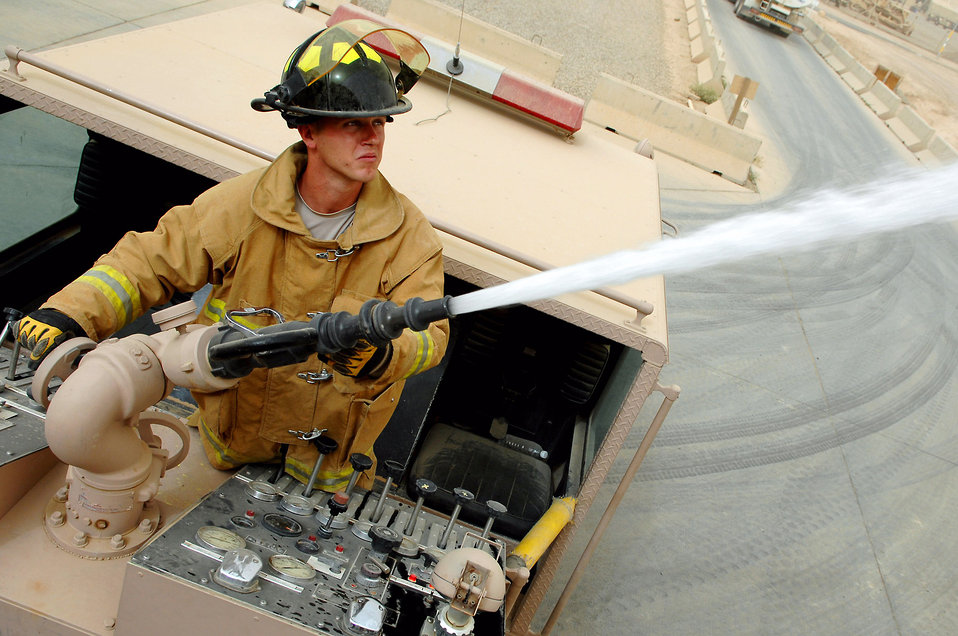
Firefighting is a joint venture

Army Spc. James Taylor aims and discharges a deck gun during hose advancement and pump training April 29 at Balad Air Base, Iraq. The deck gun can pump 1,000 gallons of water per minute and is used most often when putting out large blazes. Specialist Taylor is an 8th Ordnance Company firefighter deployed from Fort Bragg, N.C.